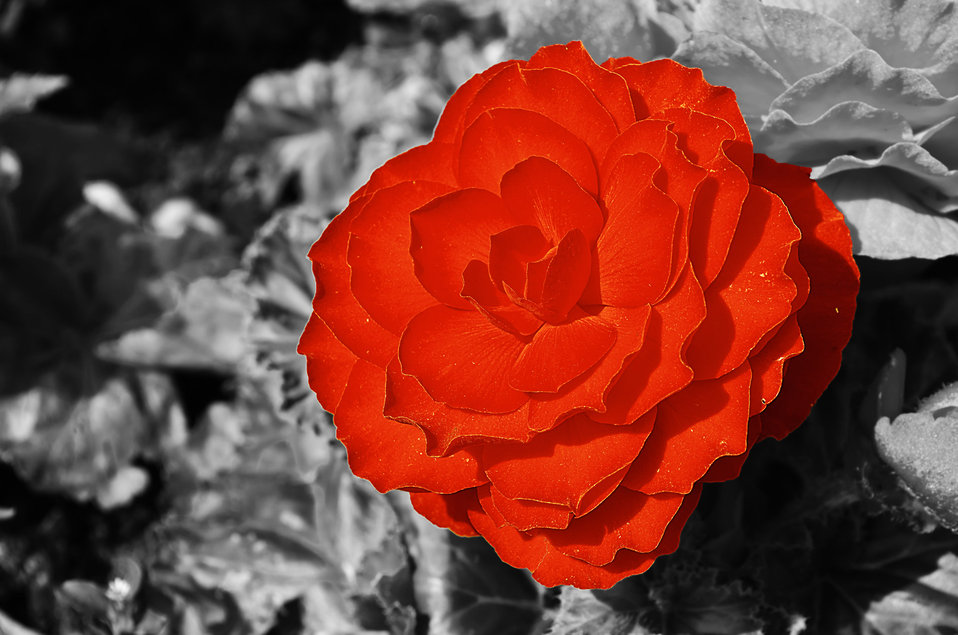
Red flower.